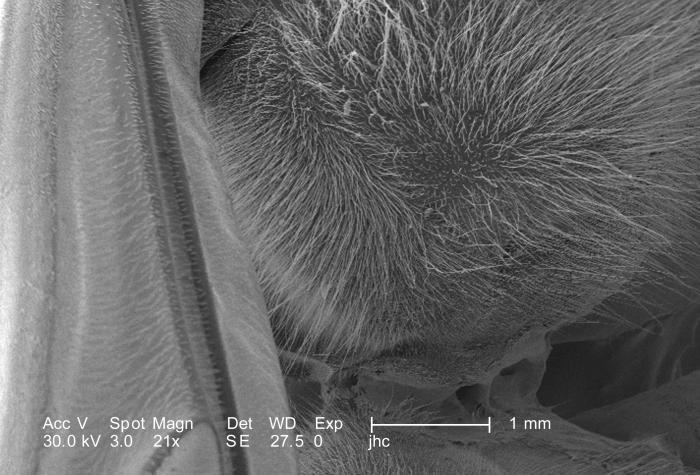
Still under a very low magnification of only 21X, but twice that of PHIL 10114, this scanning electron micrograph (SEM) depicted some of the morphologic details found on the exoskeletal surface of an unidentified hornet discovered in the suburbs of Decatur, Georgia. In this particular view, which centers on the insect's body where its midsection, or thorax, attaches to its abdomen by the 'petiole', you'll note its two forewings, left hindwing, and sensorial 'hairs' covering almost the entire exterior. Like its exoskeleton, all of these structures are composed of 'chitin'.